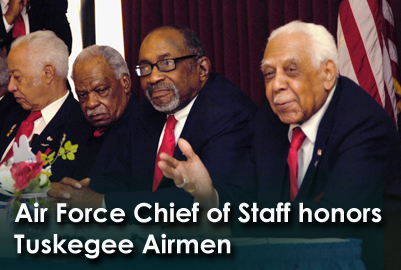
CSAF: Legacy of Tuskegee Airmen